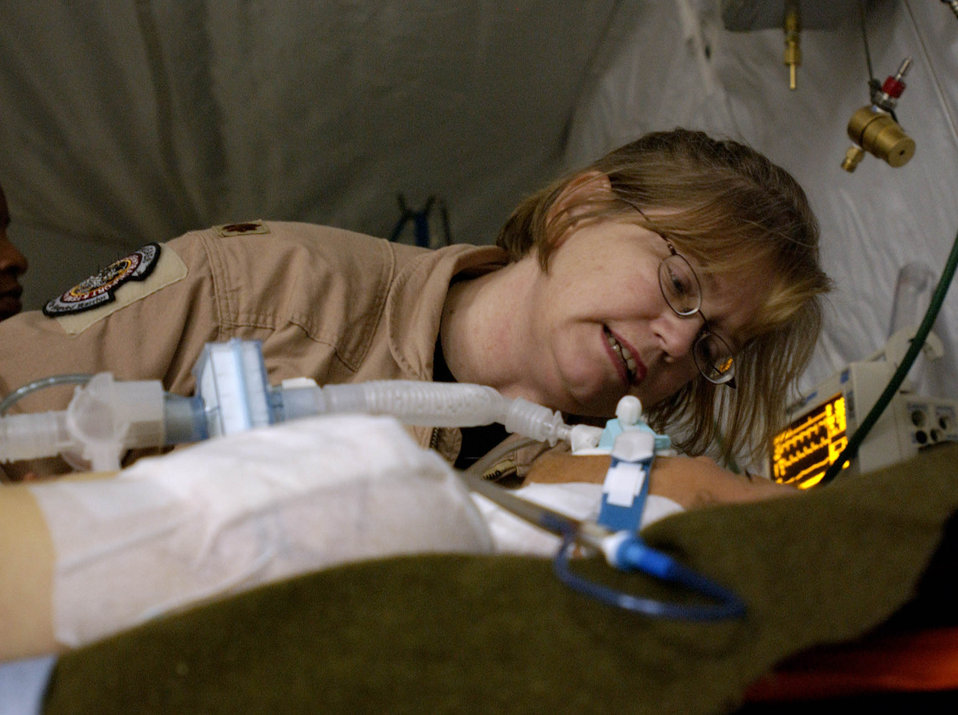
Intensive care in the air

BALAD AIR BASE, Iraq -- Maj. Kathleen Browning introduces herself to a critically injured patient at the Air Force Theater Hospital here. She is a nurse who is part of a three-person critical-care air-transport team from Ramstein Air Base, Germany. Major Browning later escorted the patient on a medevac flight to Germany aboard a C-141 Starlifter from Wright-Patterson Air Force Base, Ohio. She is deployed from the 374th Medical Squadron at Yokota AB, Japan.